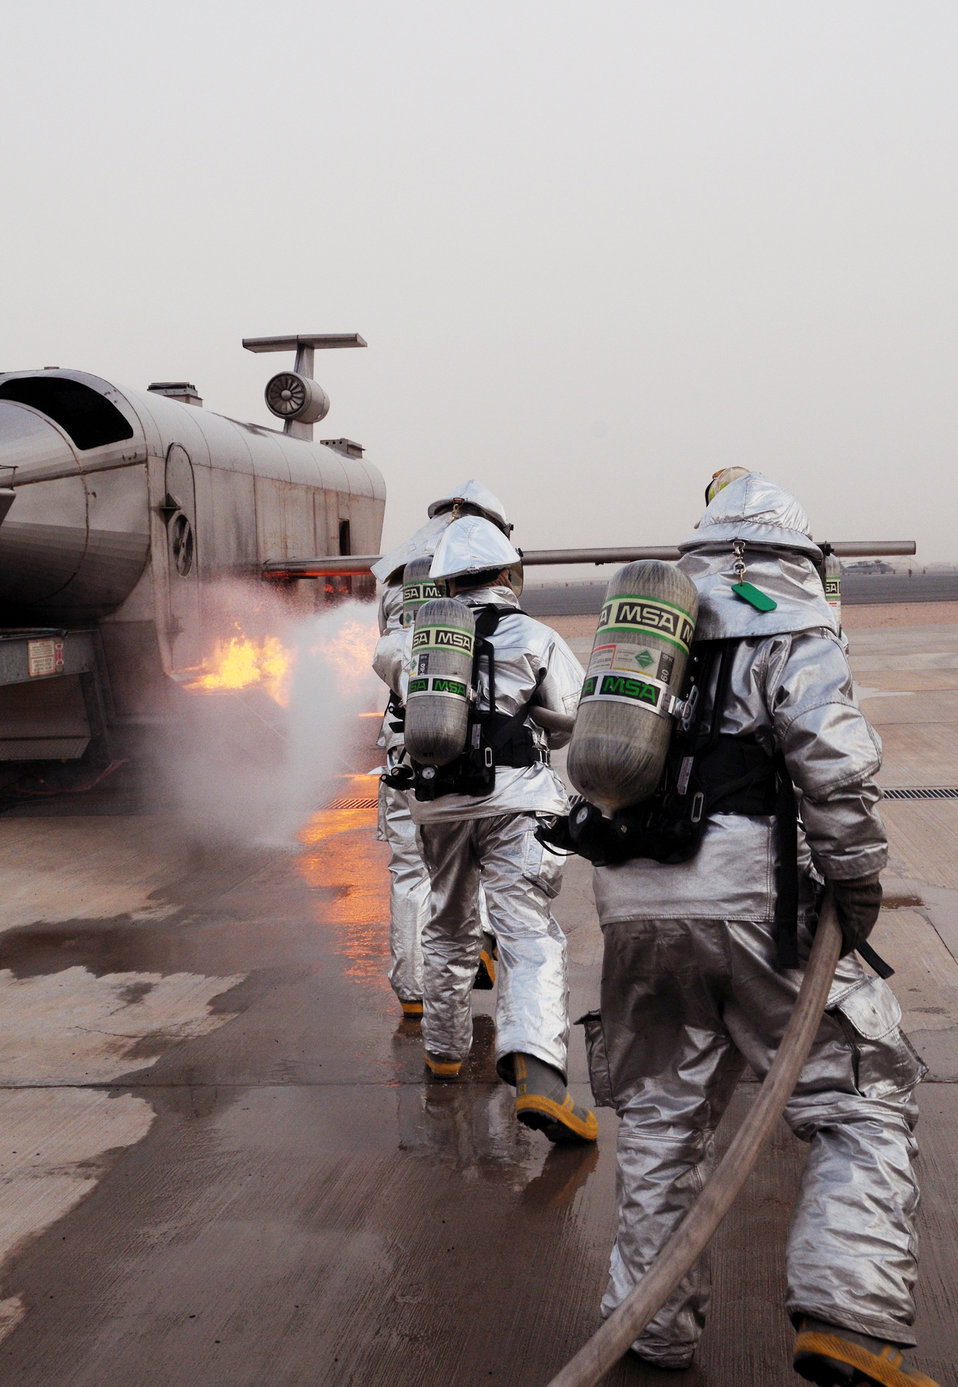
Firefighters test their skills

Firefighters practice extinguishing an aircraft fire April 29, 2010, at an air base in Southwest Asia. The firefighters are with the 386th Expeditionary Civil Engineer Squadron.